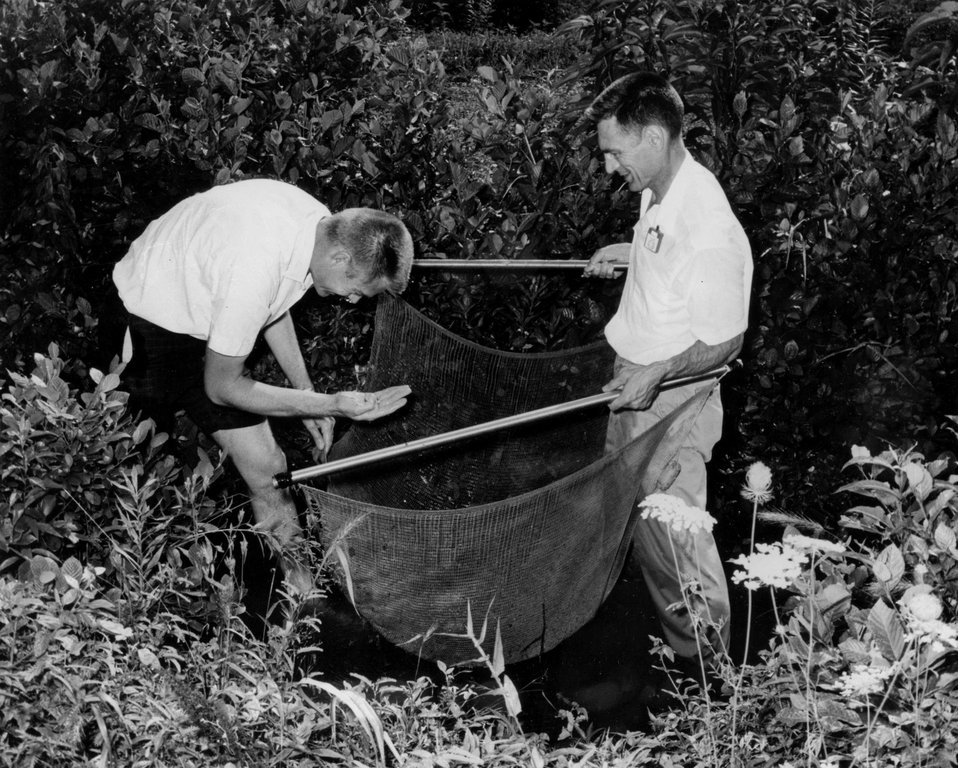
Insects and small animals 'tagged' with harmless amounts of radioactive material are traced and studied by participants in the radiation ecology courses presented by the Special Training Division of Oak Ridge Associated Universities, in cooperation with Oak Ridge National Laboratory. c. 1970